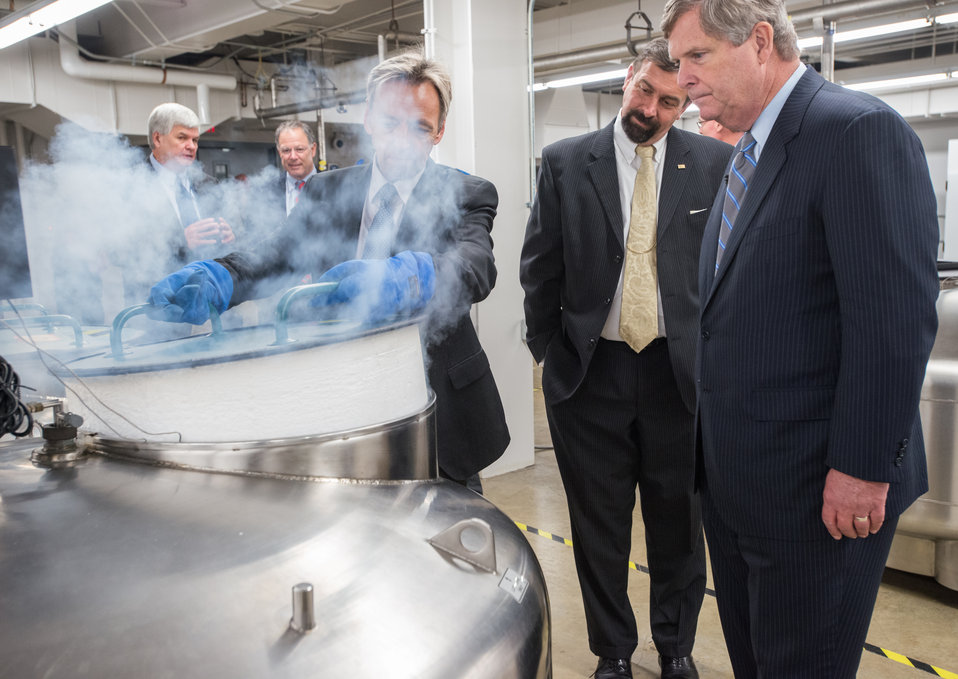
Displaced nitrogen vapors rush out at the U.S. Department of Agriculture (USDA) Agriculture Research Service (ARS) National Center for Genetic Resources Preservation (NCGRP) Research Geneticist Leader Dr. David Dierig closes a cryogenic storage tank with a thickly insulated plug, while Colorado State University (CSU) President Dr. Anthony Frank and Agriculture Secretary Tom Vilsack look on at the Cryogenic Storage Vault at USDA's ARS National Center for Genetic Resources Preservation (NCGRP) in Ft. Collins, CO on Wednesday, Nov. 6, 2013. The vault stores more than 45 cryogenic tanks that hold animal germplasm, plant tissue cultures, and seeds that are stored at -196 °C (-321 °F) in liquid storage or to -193 °C (-315 °F) in vapor storage. NCGRP is the largest agricultural gene bank facility in the U.S. The NCGRP staff conducts groundbreaking research to develop more efficient and effective means for preserving plant and animal germplasm, and for better understanding the genetic structure of these invaluable materials. The research findings, preservation techniques, and specialized technology developed by the NCGRP have been adopted by gene banks around the world: many international scientists travel to the NCGRP for research and training.